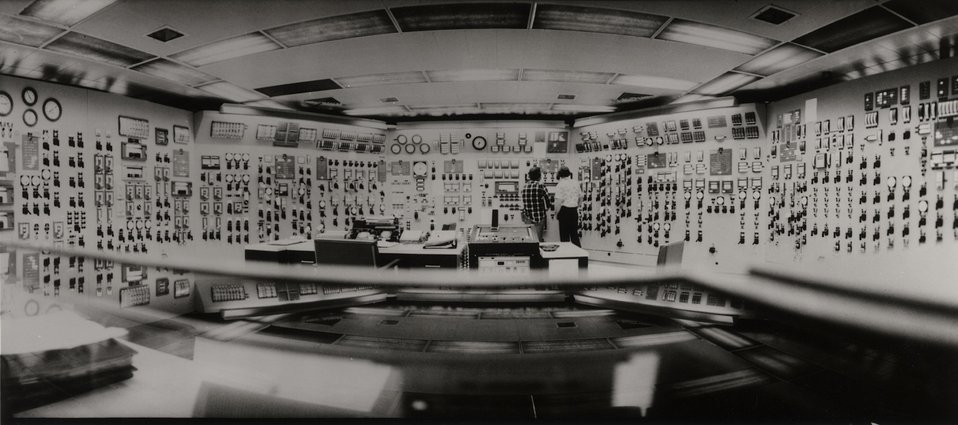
This is the control room for the 1,050,000 kilowatt Unit 1, one of two generating units at the Donald C. Cook Nuclear Plant, Bridgman Mich.